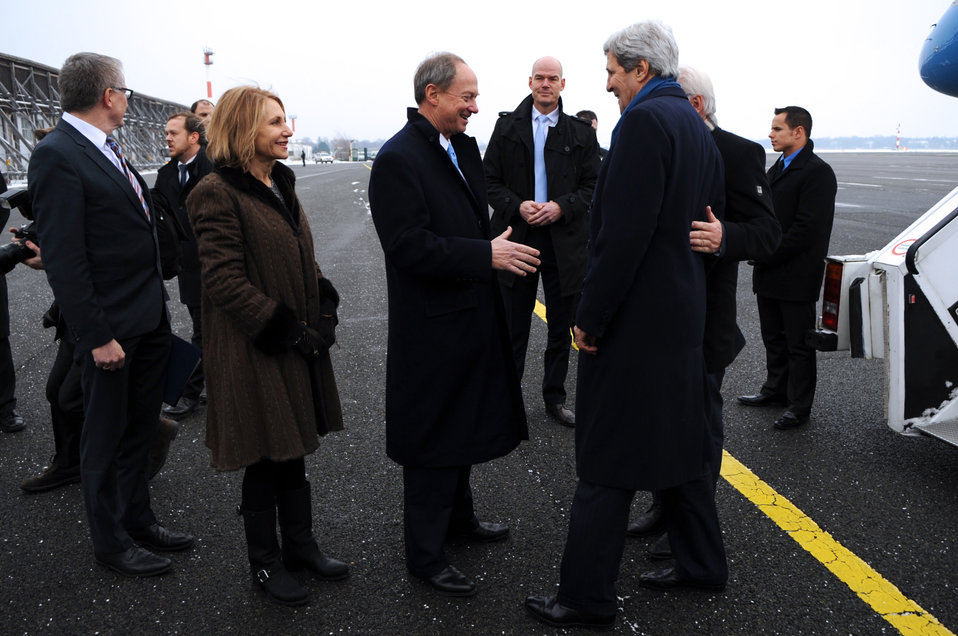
Secretary Kerry Arrives in Berlin, Germany

U.S. Secretary of State John Kerry is greeted by U.S. Ambassador to Germany John Emerson upon his arrival in Berlin for a bilateral discussion with Foreign Minister Frank-Walter Steinmeier and a meeting with Chancellor Angela Merkel on January 31, 2014.